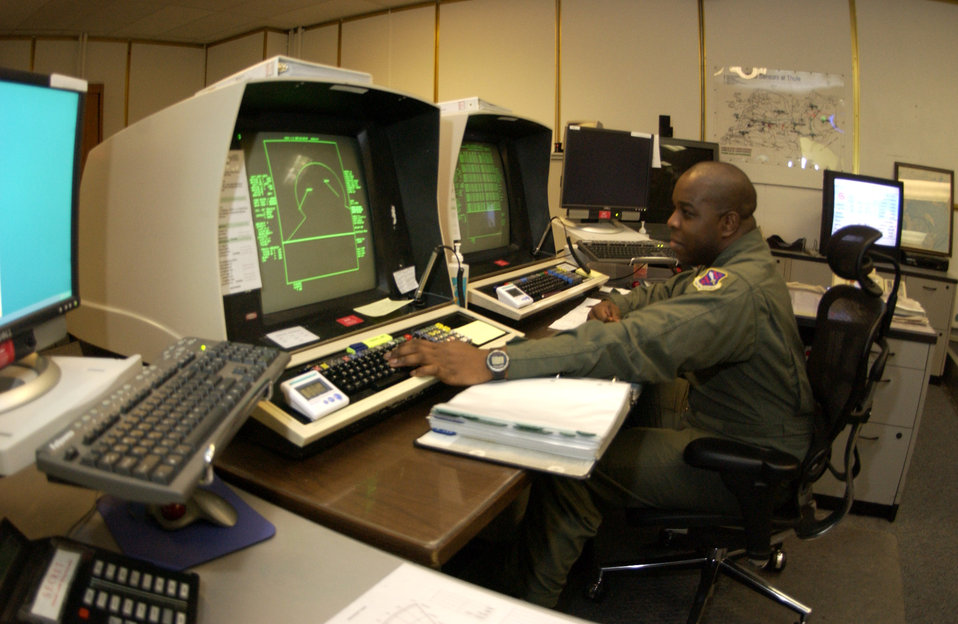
Life at Thule

Staff Sgt. Carl White monitors screens that allow him to see objects in space over the northern polar area Jan. 25 at the Ballistic Missile Early Warning System site on Thule Air Base, Greenland. Sergeant White is a space console operator. Airmen serve a one-year remote, unaccompanied tour here in a multinational environment.